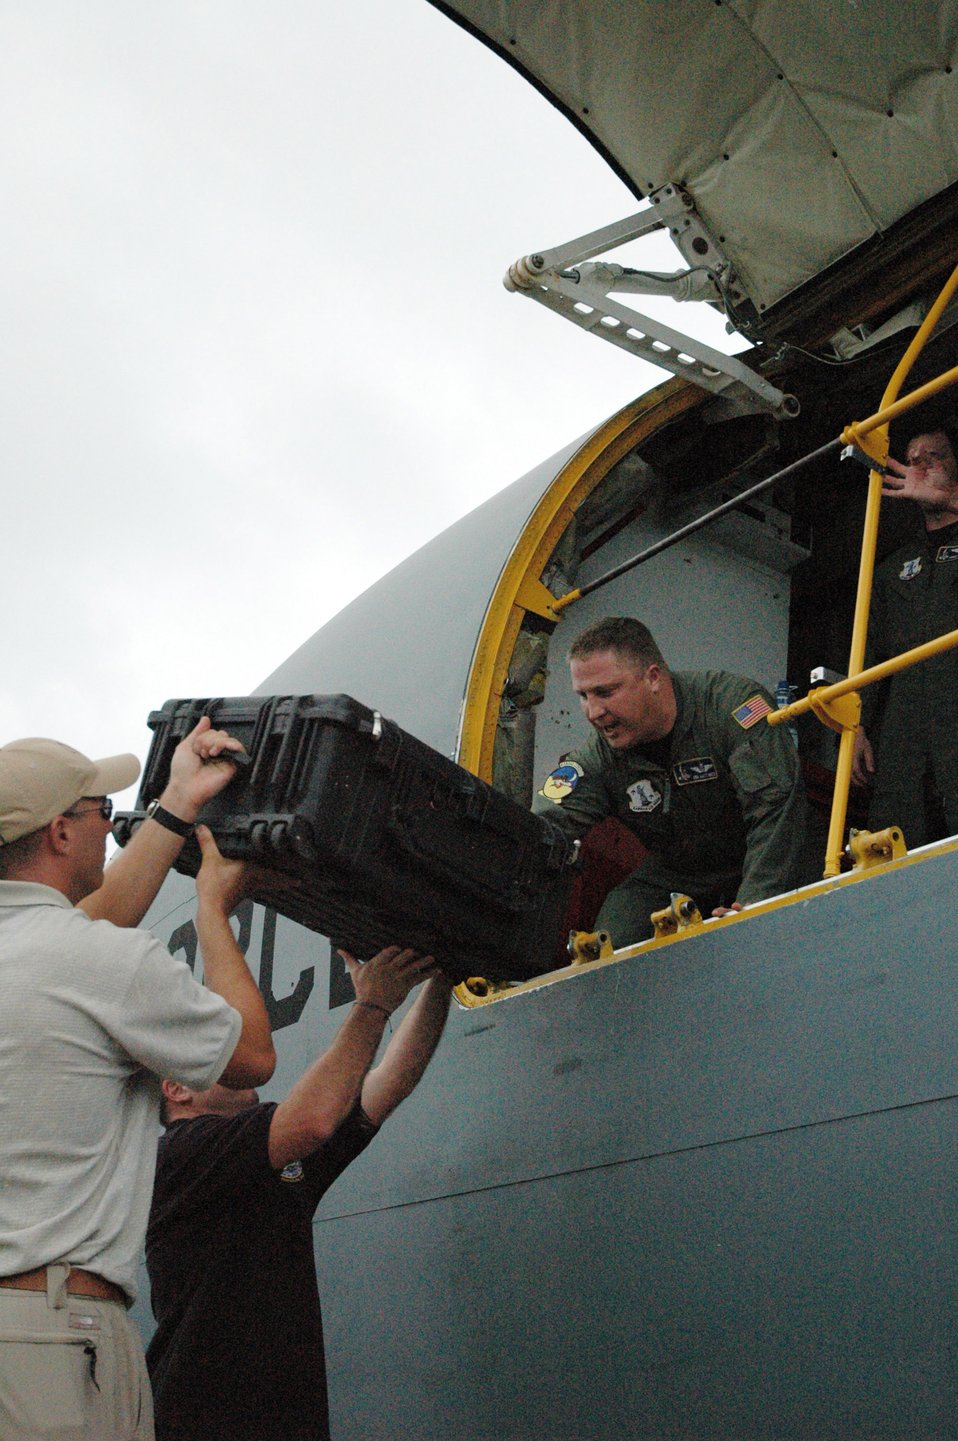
Kansas aircrew brings WW II comrades back from watery grave

Navy divers hand Master Sgt. Matt Miltz a sealed case containing remains of a B-24 Liberator crewmembers shot down during World War II off the western Pacific island of Palau March 3 at Palau International Airport, Palau. Sergeant Miltz placed the case, and another like it, in the cabin of the KC-135 Stratotanker that flew the remains to Hawaii for identification. Sergeant Miltz is assigned to the 190th Air Refueling Wing from the Kansas Air National Guard.